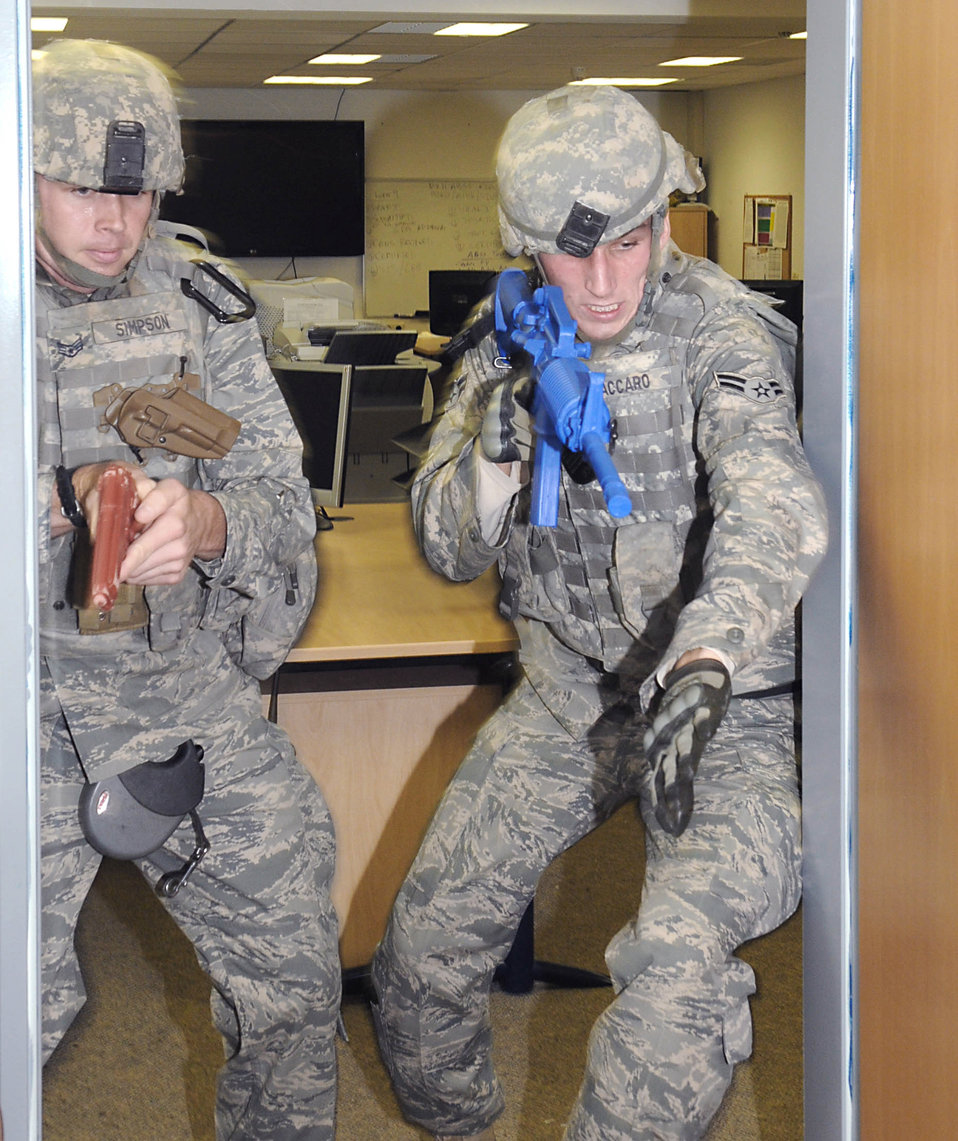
Security Airmen train to handle active shooter threats

Staff Sgt. David Simpson (left) and Airman 1st Class Anthony Vaccaro rush into a room to clear it during active shooter training Oct. 4, 2010, at Spangdahlem Air Base, Germany. Sergeant Simpson is a 52nd Security Forces Squadron K-9 handler. Airman Vaccaro is a 52nd SFS patrolman.